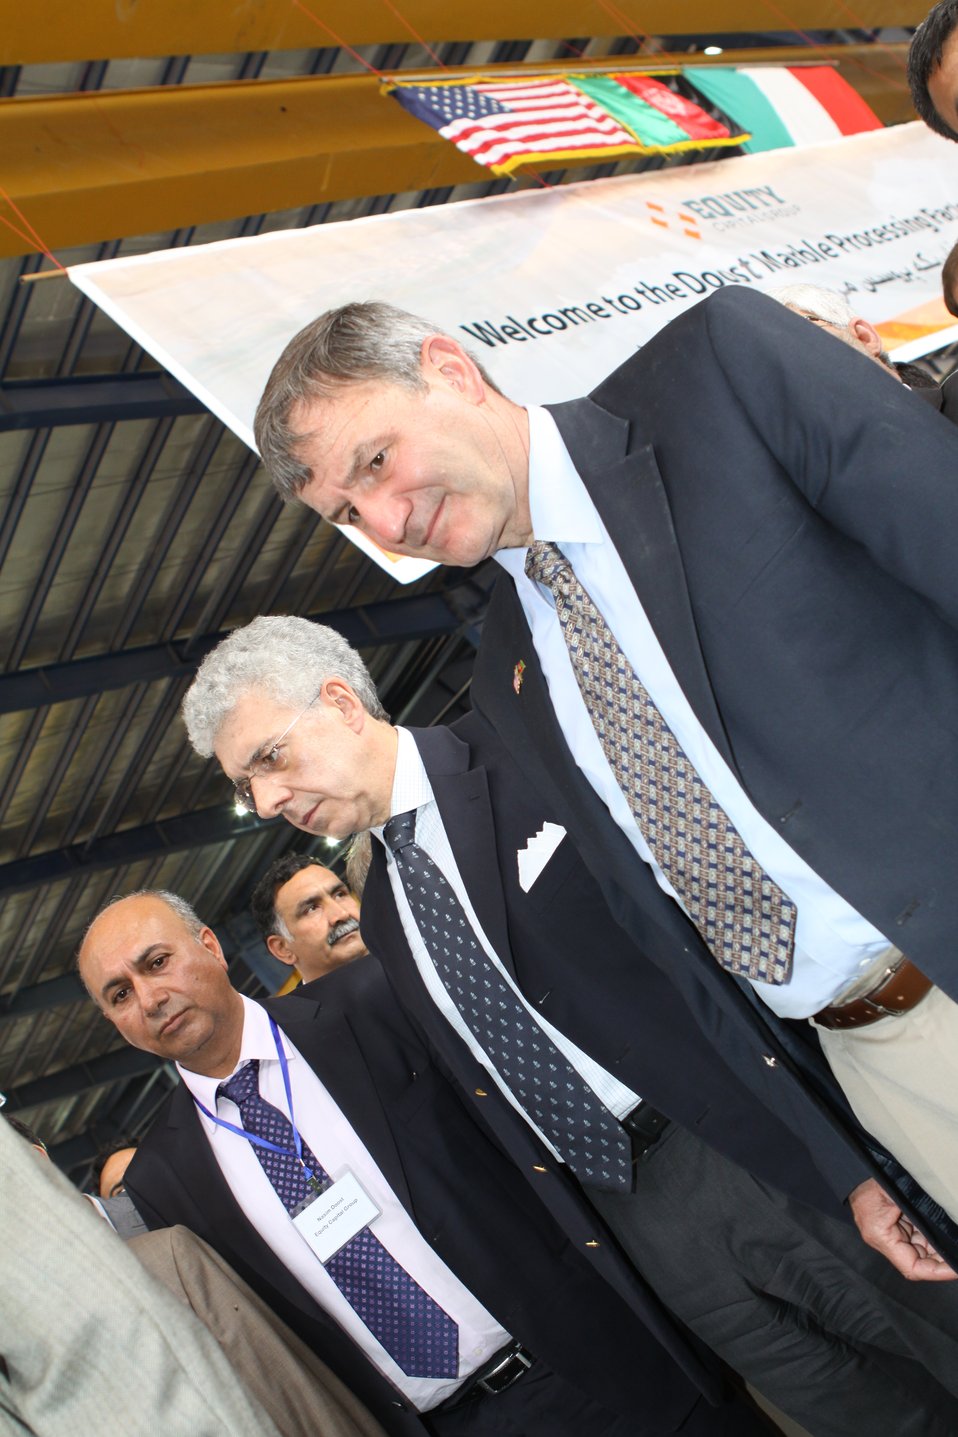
100525 Hirat Marble Conference 490